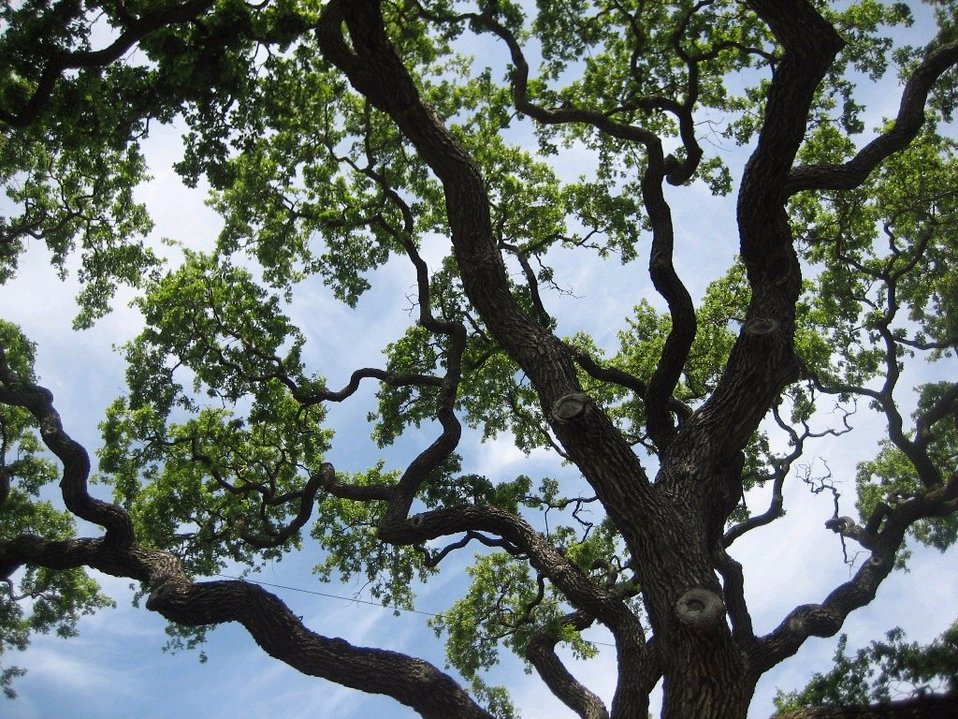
Uploaded by request of Wood Turner

Taken in Menlo Park, CA

Live oaks are some of the most astounding and beautiful trees I've ever seen. That they grow so vibrantly in the otherwise arid landscapes of the Bay Area's Peninsula and East Bay make them capture the imagination even moreso. As I stood beneath this tree in Menlo Park, I was overwhelmed with the sense that it was both reaching in multiple directions toward the sky and contributing so positively to air quality and the reduction of atmospheric greenhouse gases. I saw it as an aesthetic and functional symbol of the steadfast ability of nature to sustain itself and us.